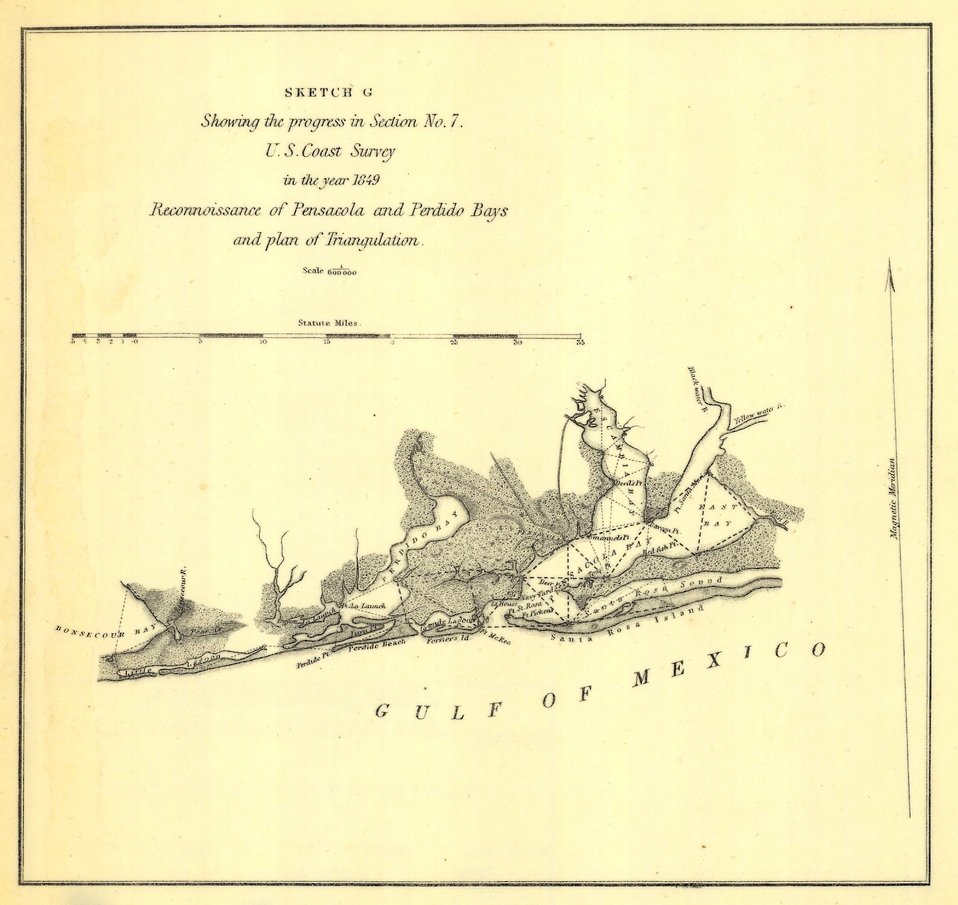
Annual Report 1849. Sketch G. Reconnoissance of Pensacola and Perdido Bays and plan of Triangulation.